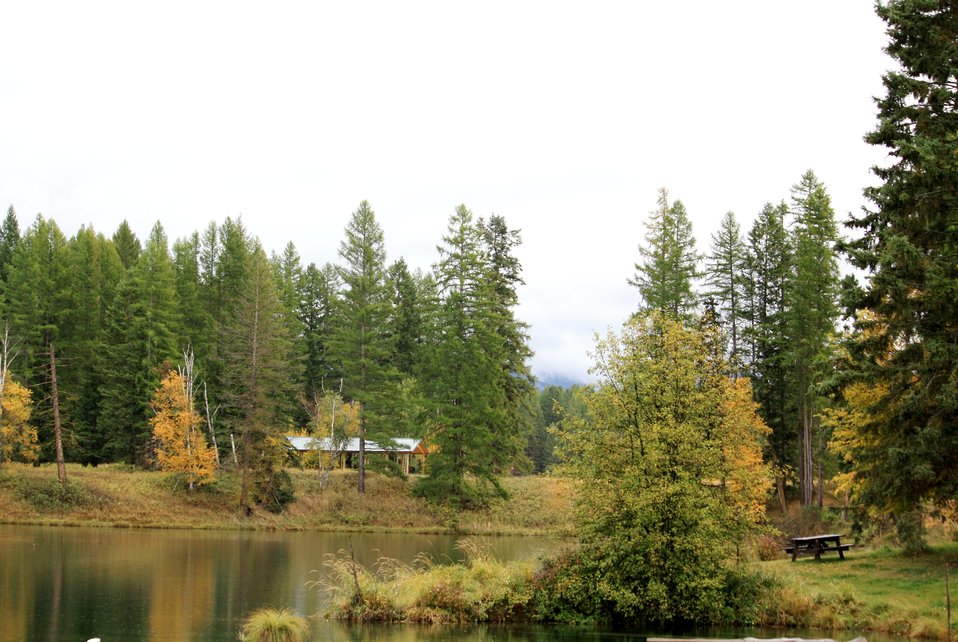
Fall at Jessup Pond

Jessup Mill Pond supports the Creston National Fish Hatchery with its spring water. A fall day at the Creston National Fish Hatchery is filled with color.

Location: Creston National Fish Hatchery

Credit: Evie Bradley / USFWS

Photo Contest Entry #111